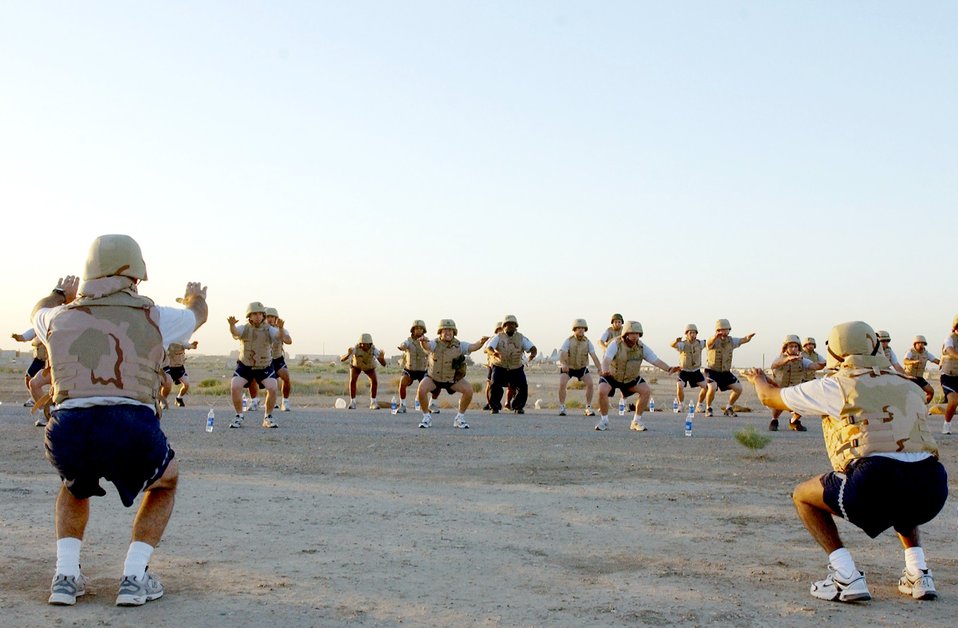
PT, desert-style

Airmen from the 407th Expeditionary Communications Squadron at Ali Base, Iraq, participate in a physical training session on Thursday, June 1, 2006, while wearing their flak vests and helmets.